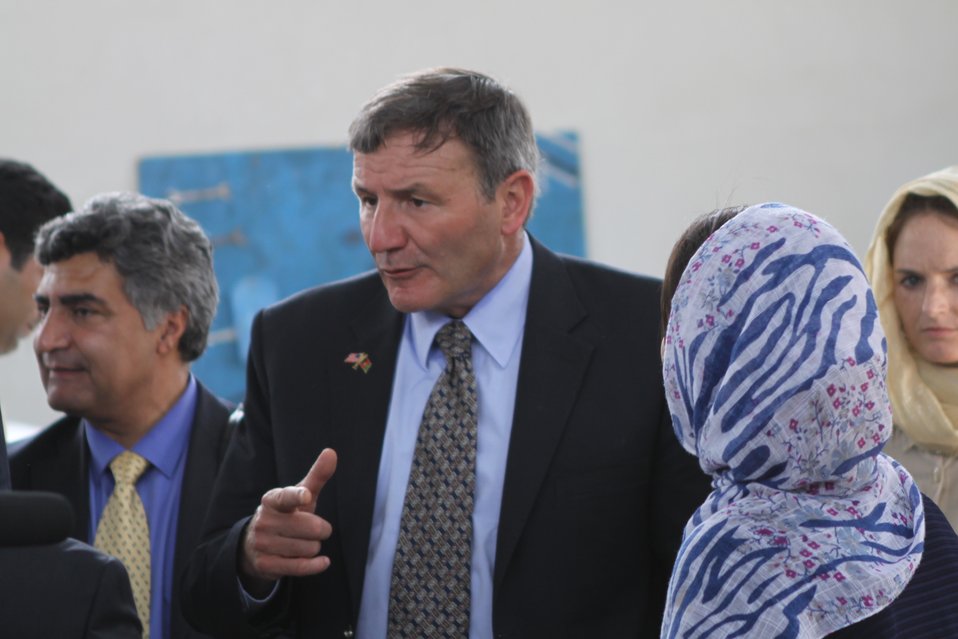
100525 Hirat Marble Conference 822